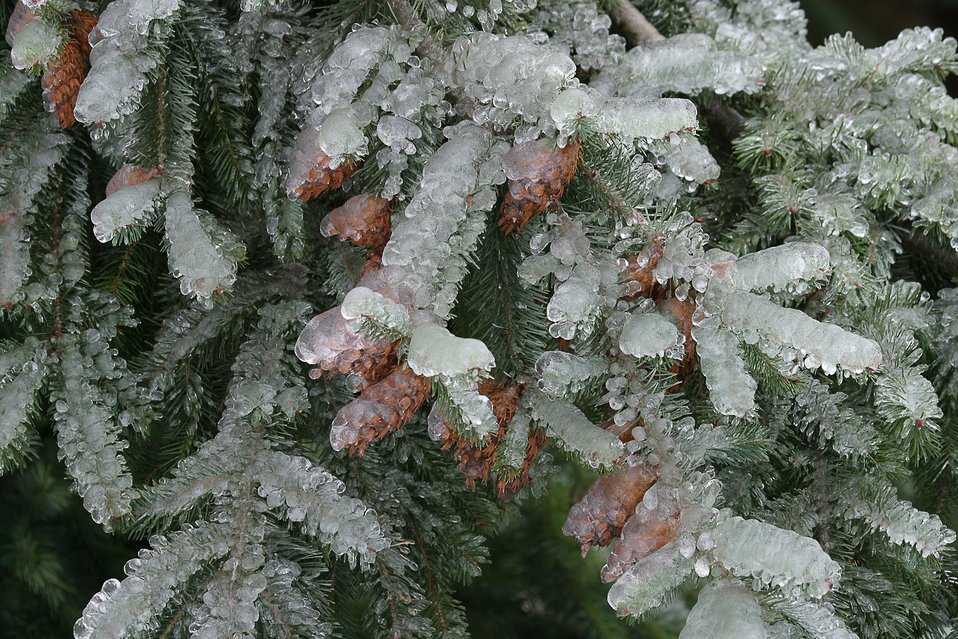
Snow and ice on Douglas Fir Bows and cones during the storm of January 2004.